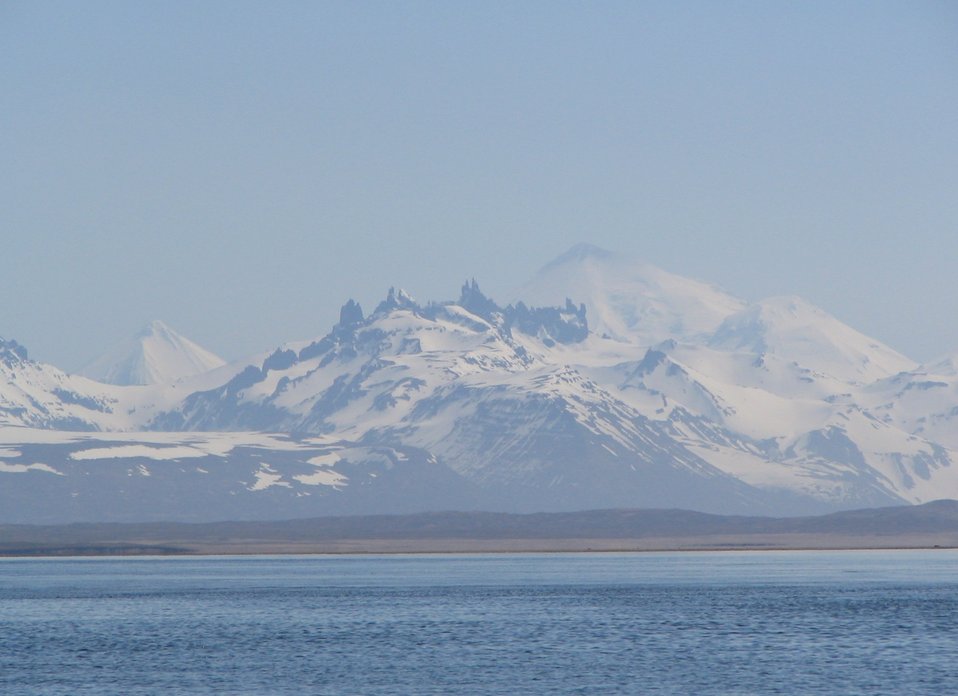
Aghileen PinnaclesandPavlof Volcano

Kinzarof Lagoon, Izembek National Wildlife Refuge